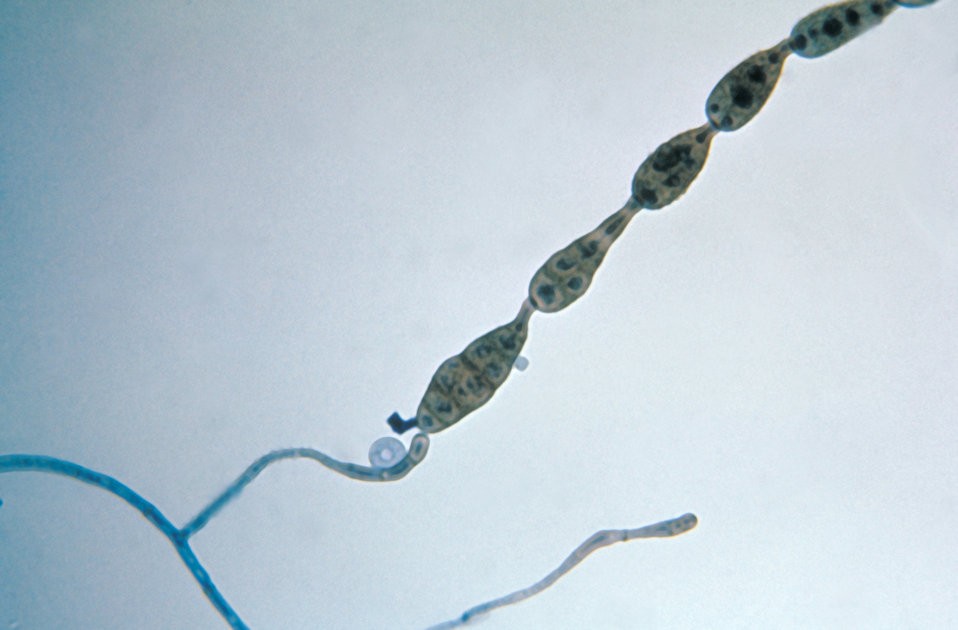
This photomicrograph shows a chain of conidia of a Alternaria sp. fungus, which can be a cause of phaeohyphomycosis.